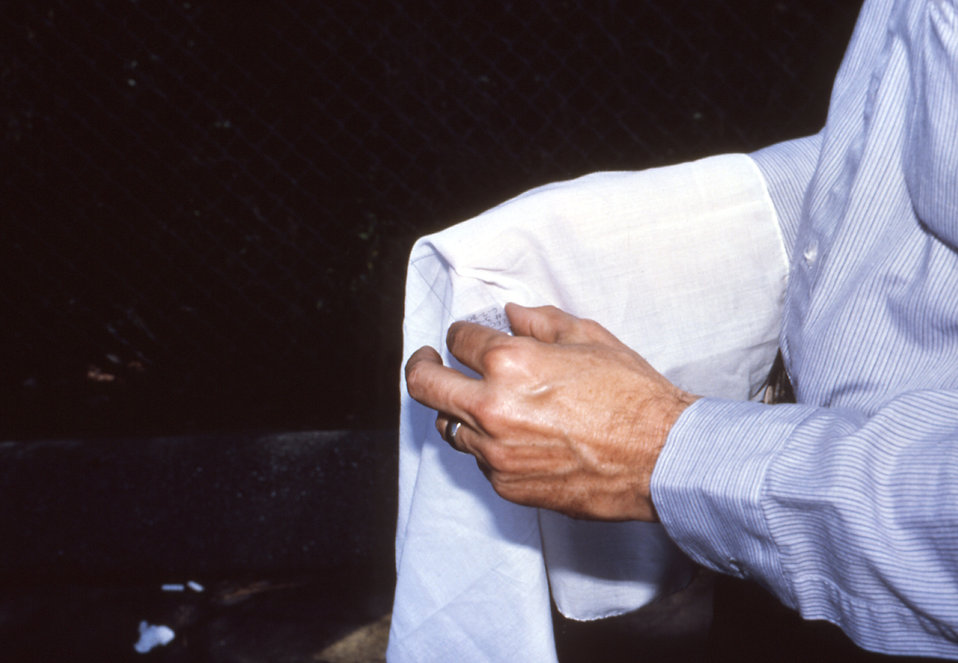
Using a clean cloth, this 1981 photograph depicted a field technician as he polished a fresh glass microscope slide upon which he would record data during an arbovirus vector field study.